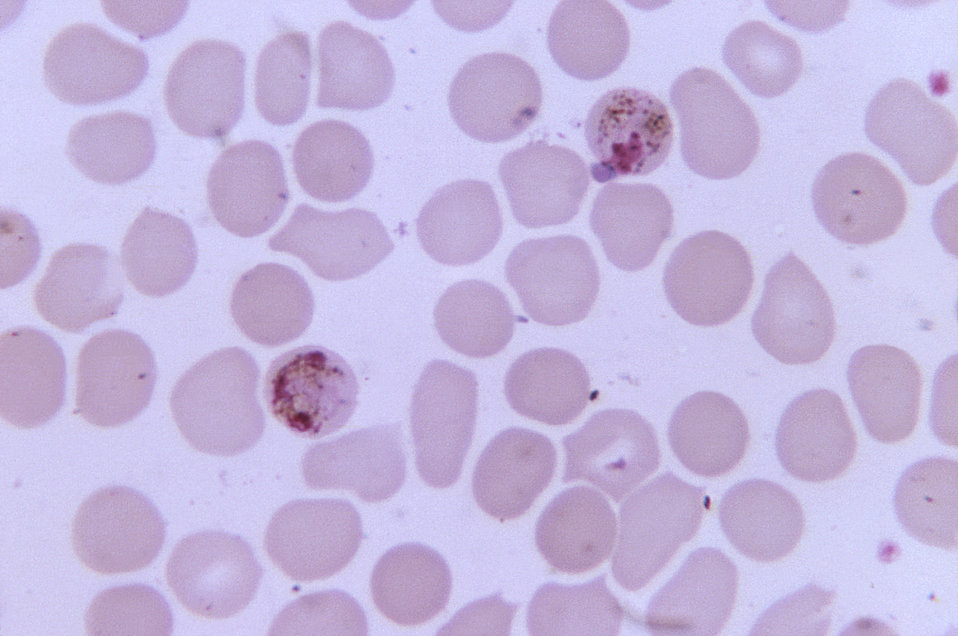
This thin film blood smear micrograph depicts two Plasmodium malariae schizonts.